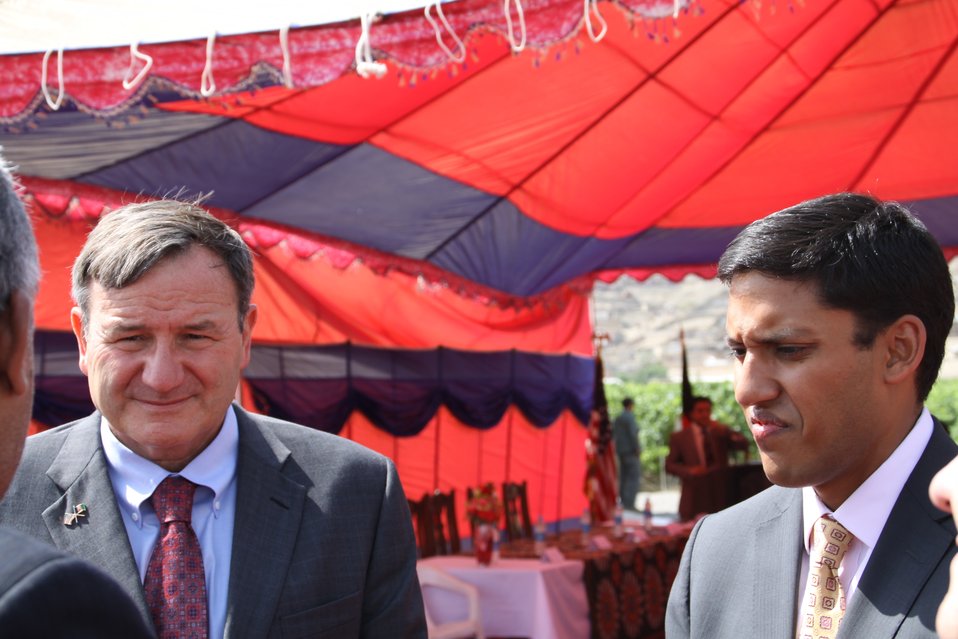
Badam Bagh Farm